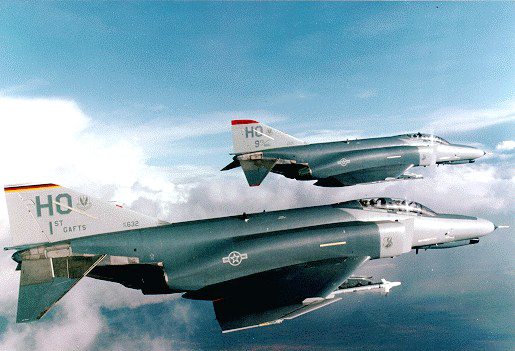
'Silver Lobos' fly into retirement

HOLLOMAN AIR FORCE BASE, N.M. -- The 20th Fighter Squadron used the F-4F Phantom II to train German air force crews from 1972 to 2004. The squadron's inactivation ceremony was held here Dec. 20. By Jan. 7, all F-4s assigned to the 20th FS will be retired to the Air Force's Aerospace Maintenance and Regeneration Center at Davis-Monthan Air Force Base, Ariz.